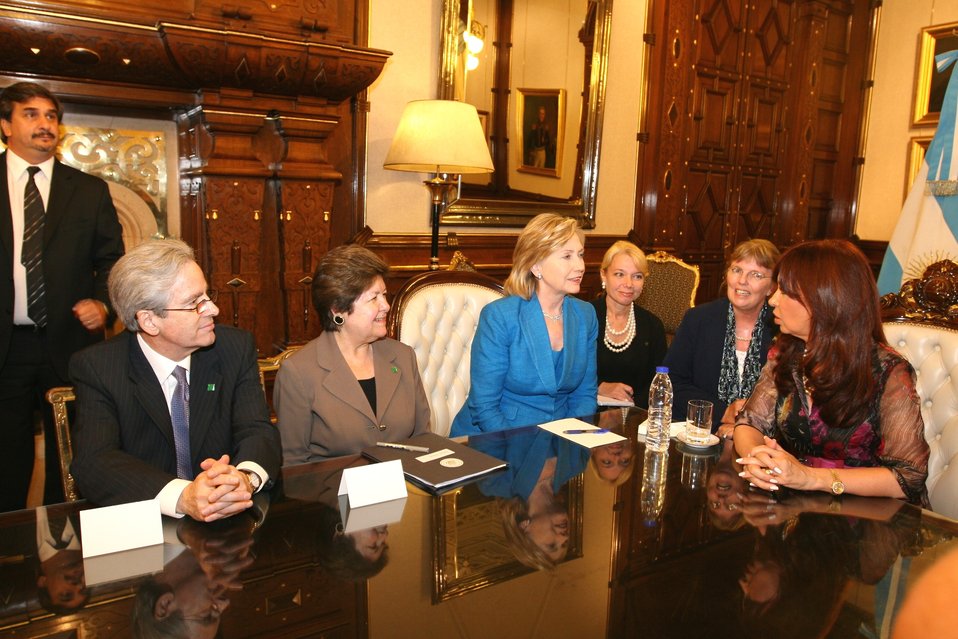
Secretary Clinton Meets With Argentine President Cristina Fernandez de Kirchner

U.S. Secretary of State Hillary Rodham Clinton during a bilateral meeting underway with Argentine President Cristina Fernandez de Kirchner in Buenos Aires, Argentina March 1, 2010.